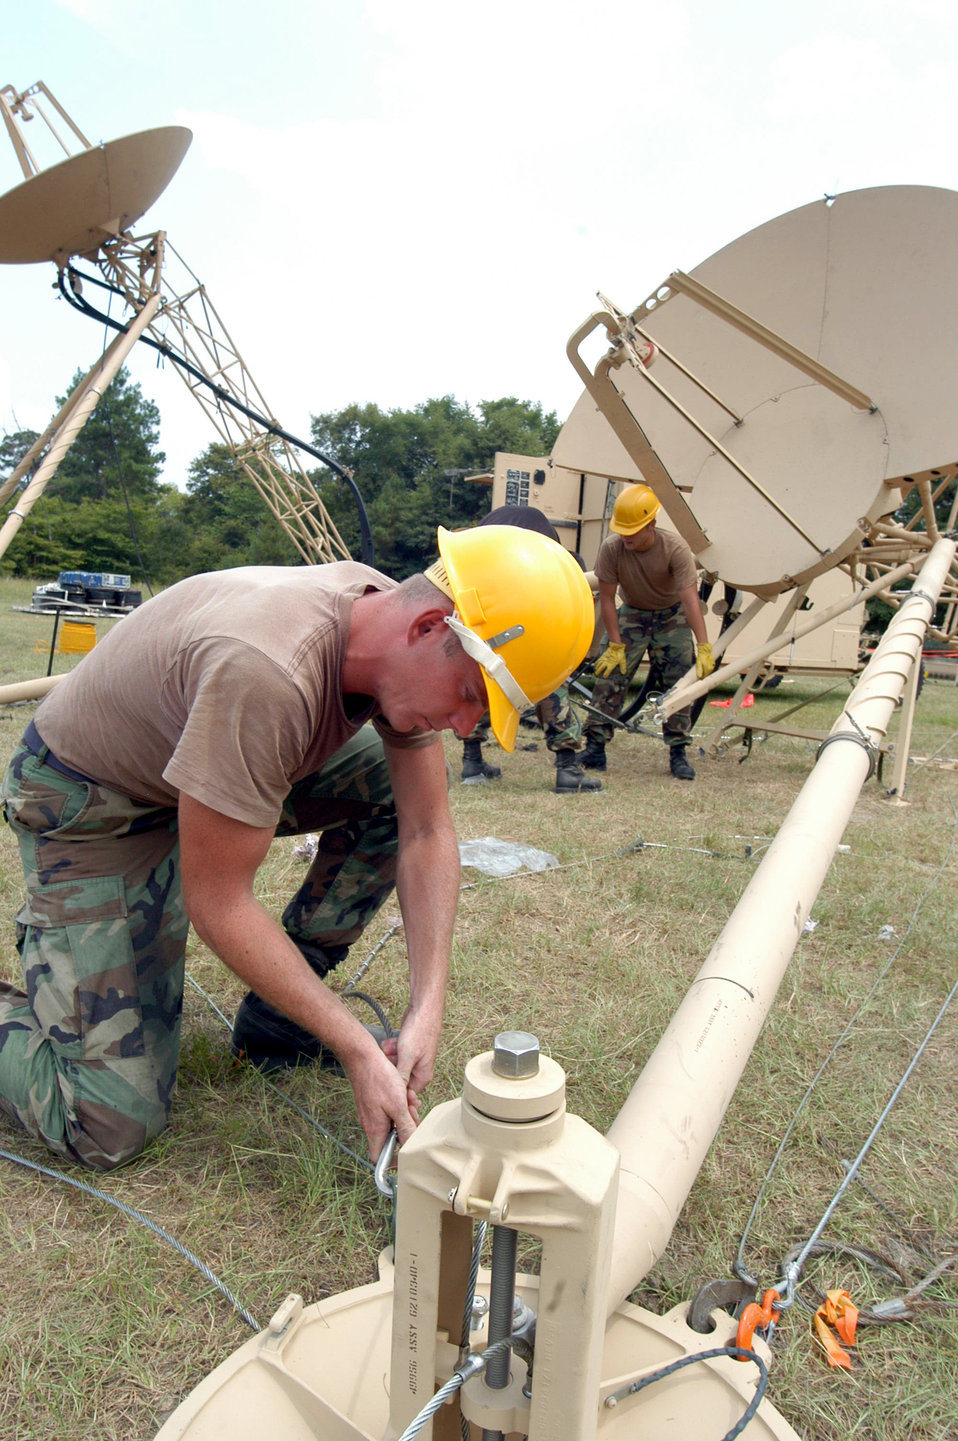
The Mob

ROBINS AIR FORCE BASE, Ga. (AFPN) -- Airman 1st Class Robert Acker sets up an antenna here. He is assigned to the 51st Combat Communications Squadron, commonly called the